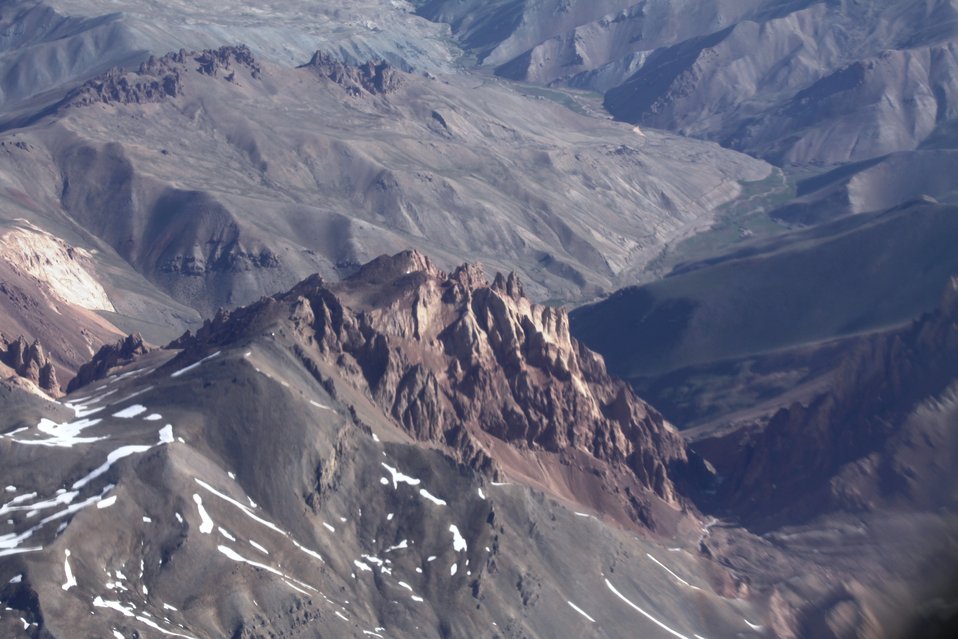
100525 Hirat Marble Conference 013